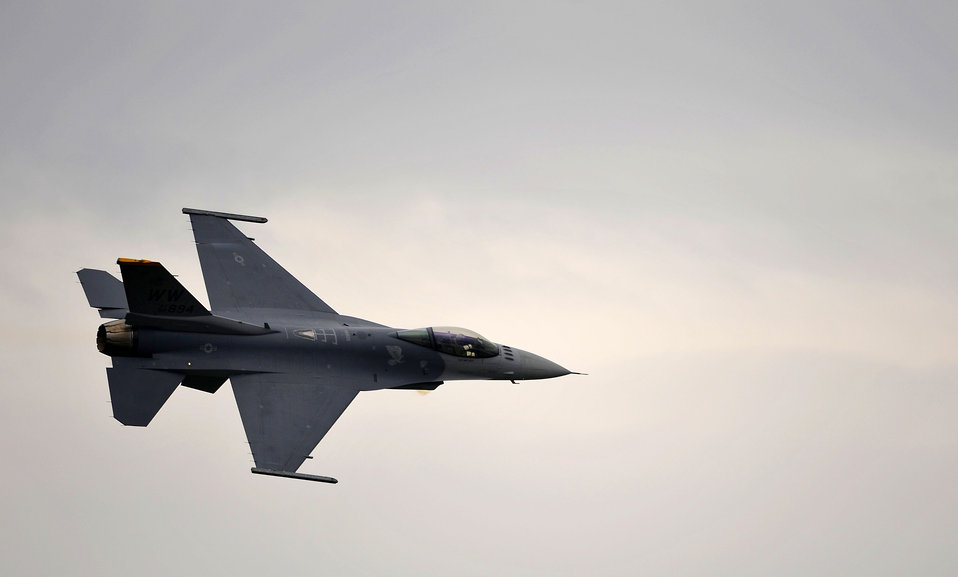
Misawa Air Festival

Capt. Jeffrey Schneider, a Pacific Air Forces Aerial Demonstration Team pilot, performs a flyby during the Misawa Air Festival Sept. 19, 2010, at Misawa Air Base, Japan.